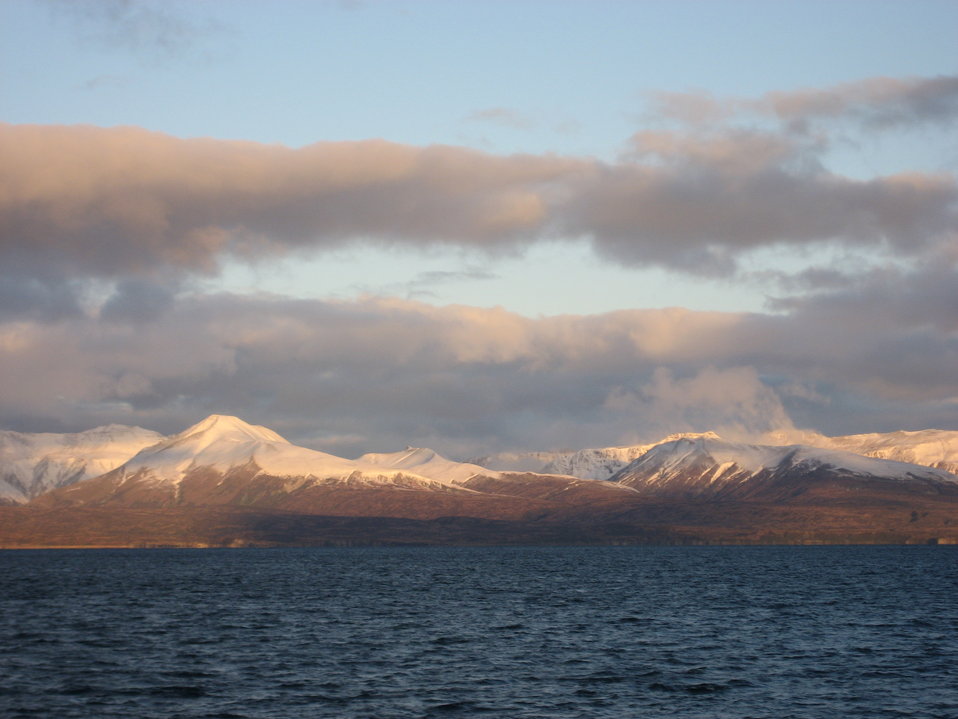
A scene along the Alaska Peninsula.